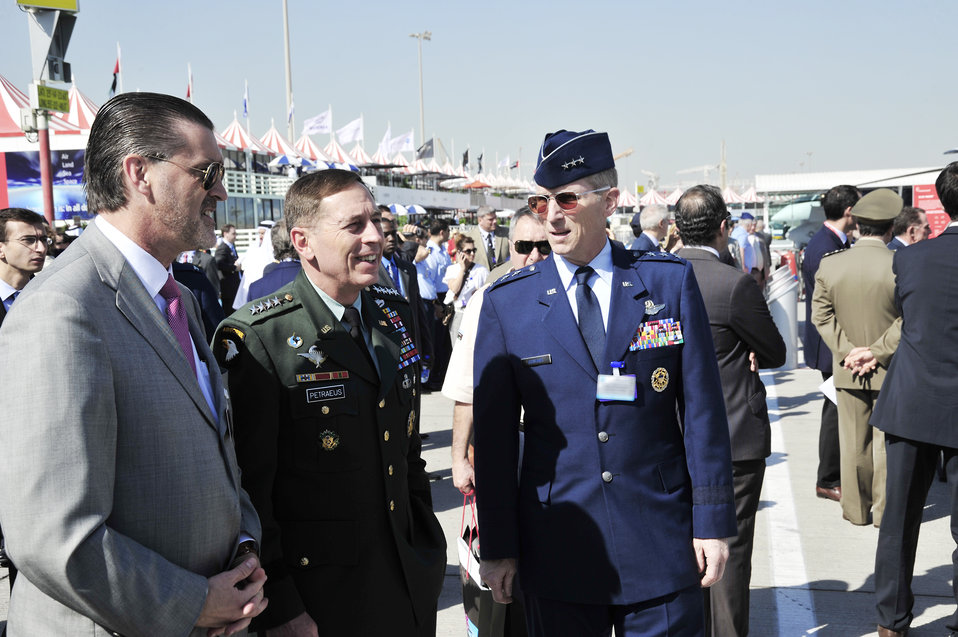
Dubai Air Show

Richard Olsen, the U.S. Ambassador to the United Arab Emirates, Army Gen. David Petraeus, the U.S. Central Command commander and Lt. Gen. Mike Hostage, the U.S. Air Forces Central Command commander, stop to talk Nov. 15, 2009 at the Dubai Air Show in the United Arab Emirates.